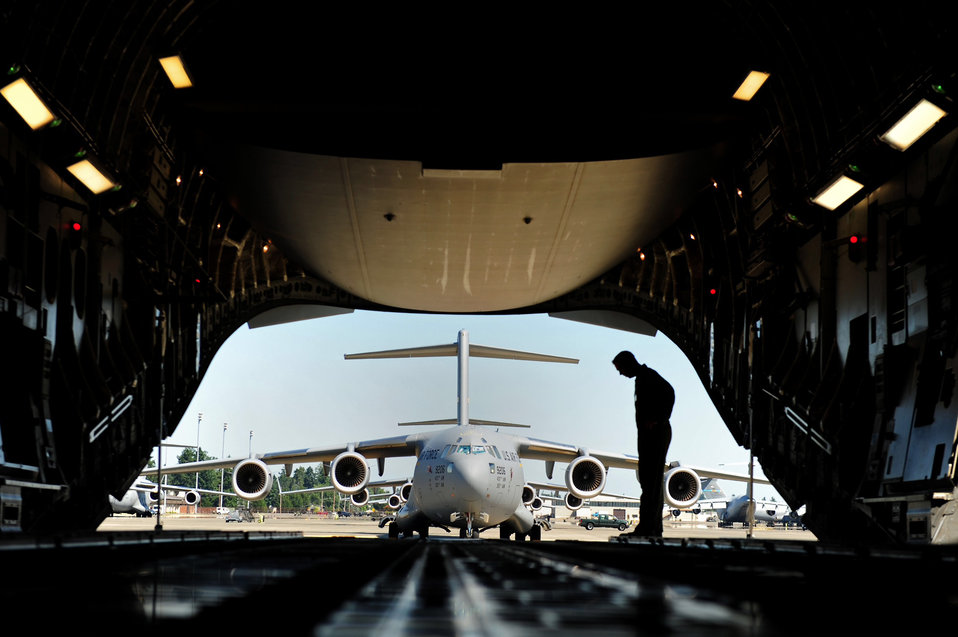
Ensuring excellence

Staff Sgt. Norm Metz inspects the container delivery systems July 28, 2011 during Air Mobility Command's Rodeo 2011 at Joint Base Lewis-McChord, Wash. Rodeo is the U.S. Air Force's and AMC's premier international combat skills and flying operations competition. Metz is a joint airdrop inspector with the 3rd Operations Support Squadron at Joint Base Elmendorf-Richardson, Alaska.